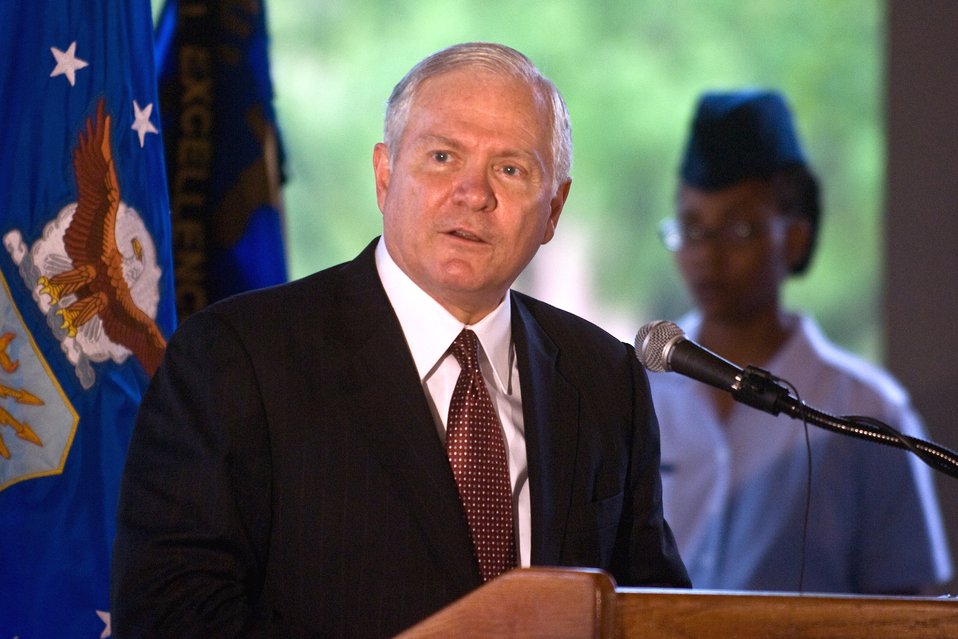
SECDEF visits Airmen, tour BMT facilities

Secretary of Defense Robert M. Gates addresses the audience during a coin ceremony for basic training graduates at Lackland Air Force Base, Texas, July 24.